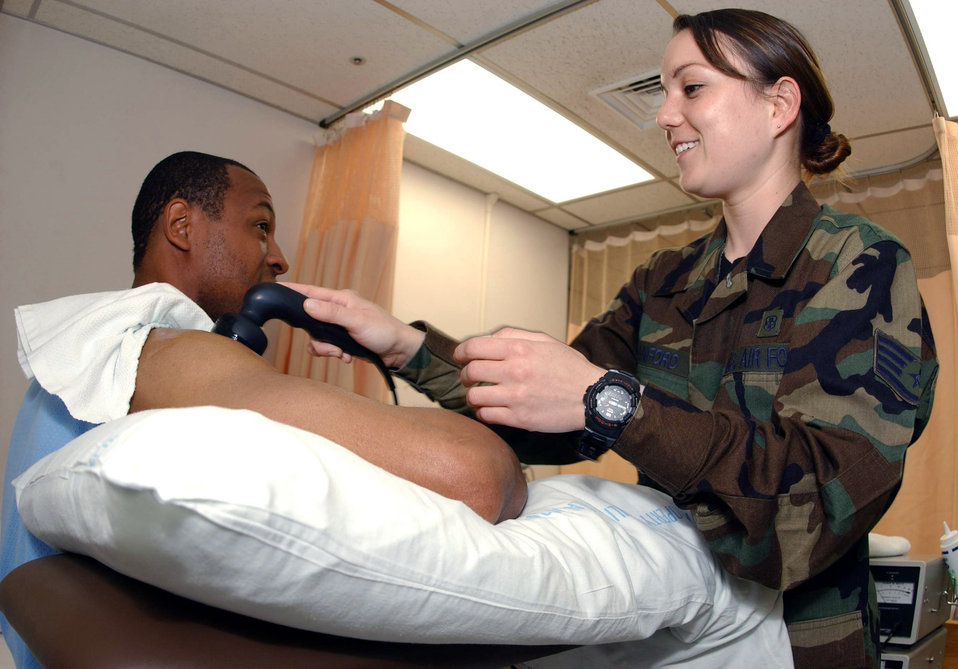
Sounds good

YOKOTA AIR BASE, Japan -- Staff Sgt Shizuka Sanford uses ultrasound equipment to treat Tech. Sgt. Jeff Fant's shoulder. Sanford is a physical therapy technician from the 374th Medical Group here. The physical therapy element provides services that help restore function, improve mobility, relieve pain and prevent or limit disabilities of thousands of patients each year.